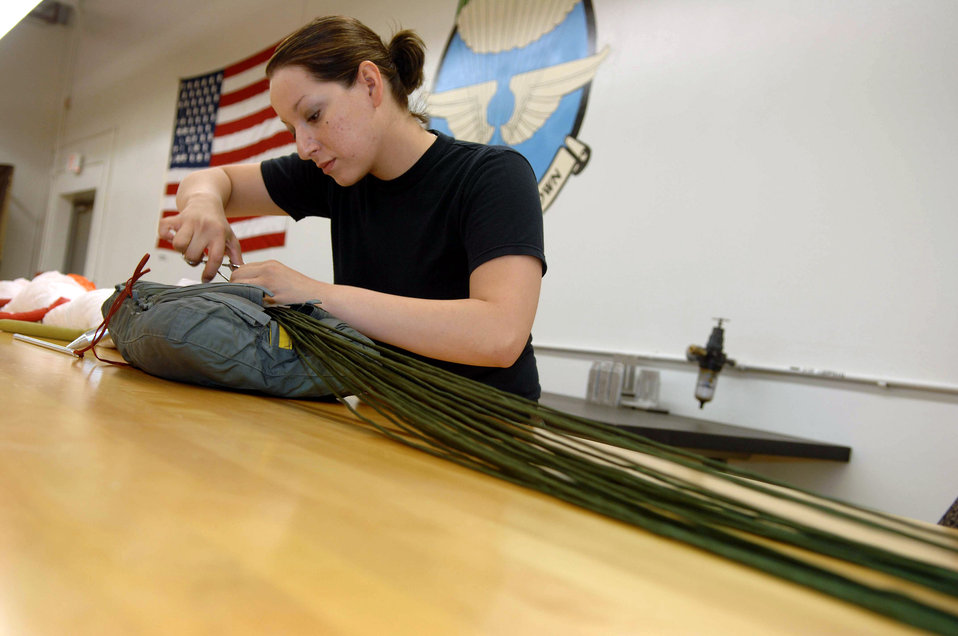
Aircrews depend on these Airmen

Senior Airman Brenda Schaub packs a parachute June 25 at Davis-Monthan Air Force Base, Ariz. Airman Schaub is an aircrew flight equipment journeyman assigned to the 355th Operation Support Squadron where she also maintains, repairs, and fabricates other types of survival equipment.